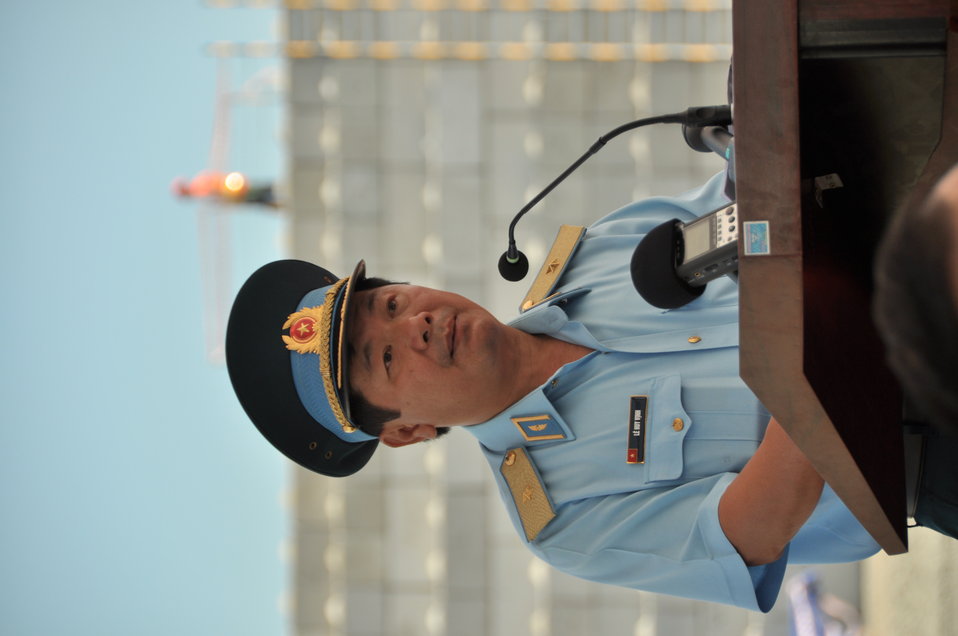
Media Tour of Environmental Remediation of Dioxin Contamination at Danang Airport

Major General Le Huy Vinh addresses the media.

Danang, Vietnam
April 24, 2013